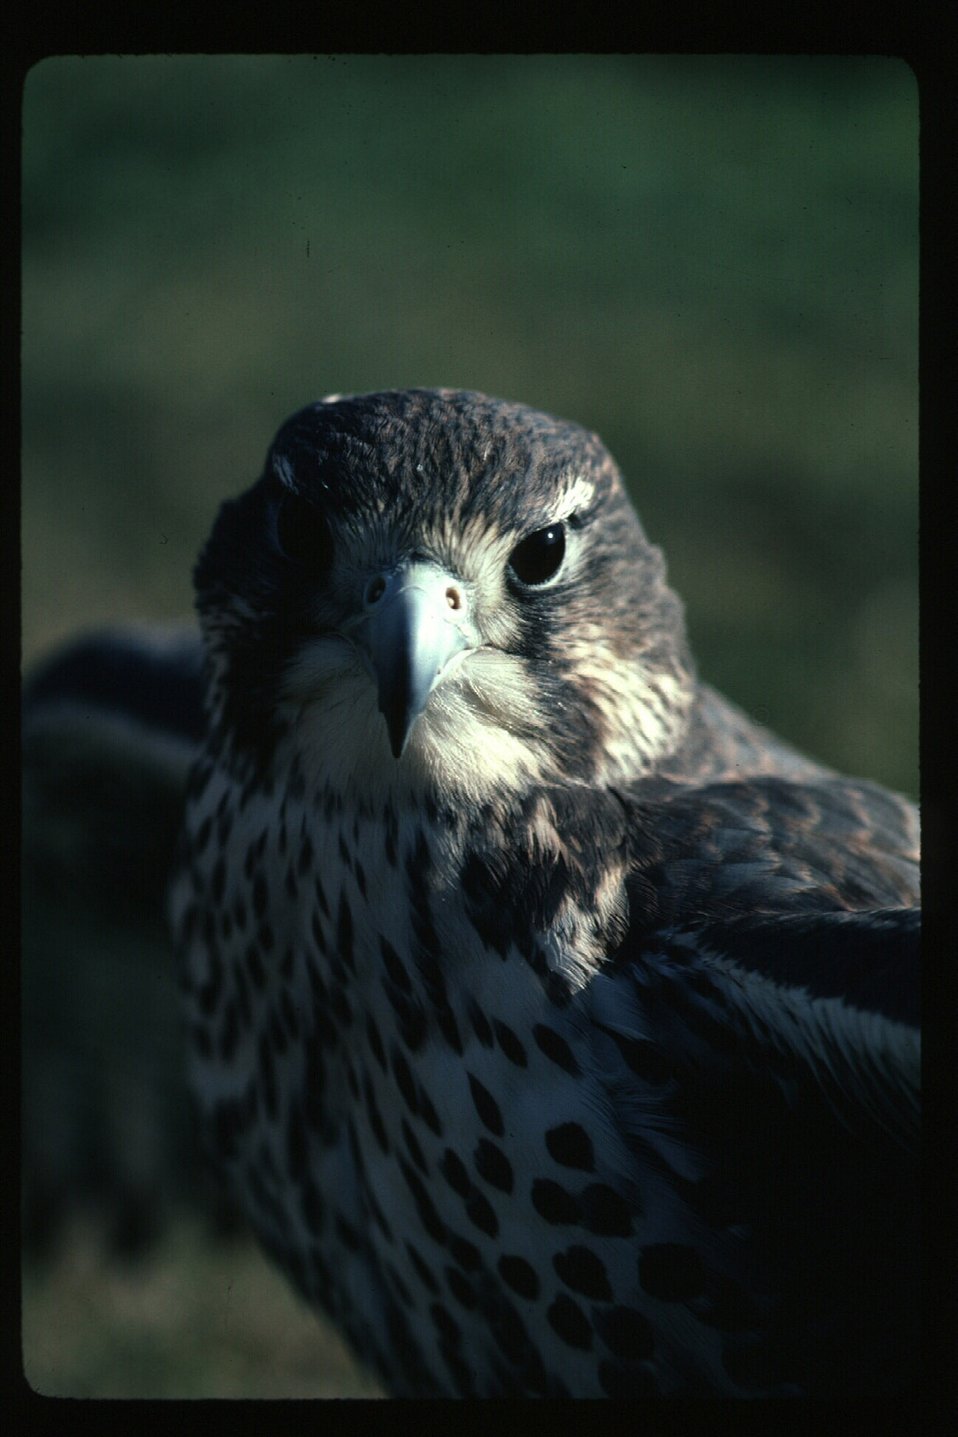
Peregrine Falcon Birds of Prey National Conservation Area BOP NCA Owyhee Field Office LSRD Lower Snake River District